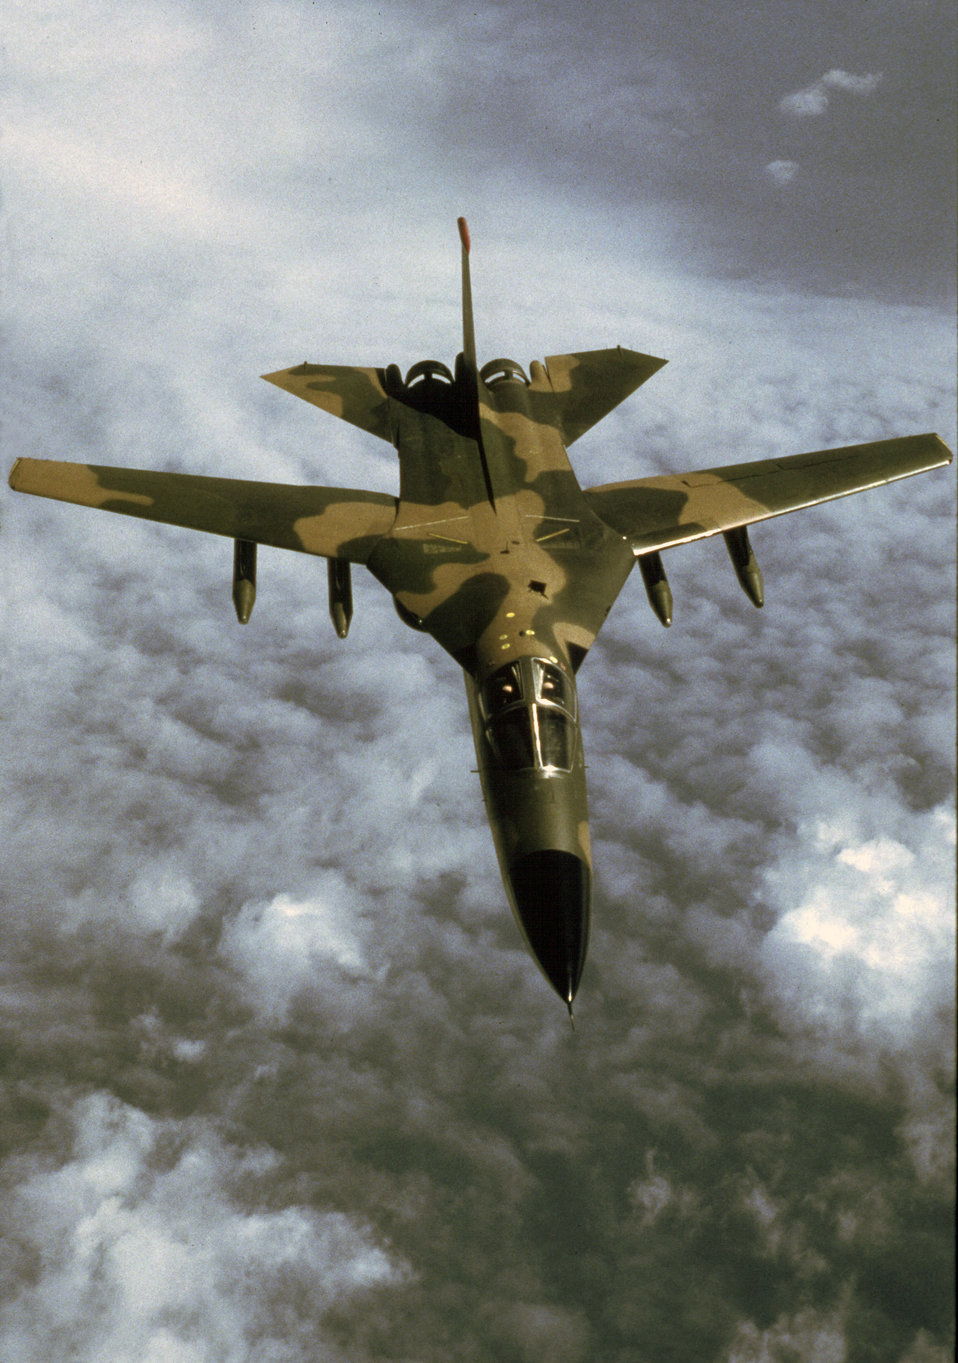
F-111 Aardvark, Air Force inventory in 1967.